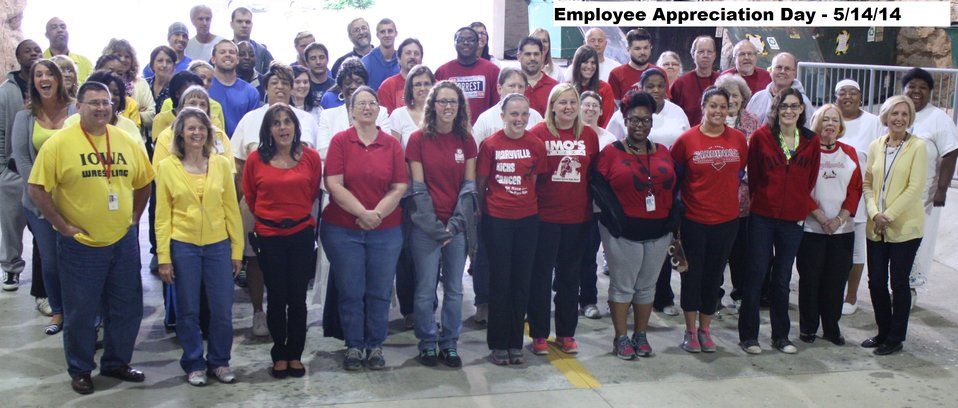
Employee Appreciation Photo; Location: National Personnel Records Center (Civilian), Valmeyer, IL